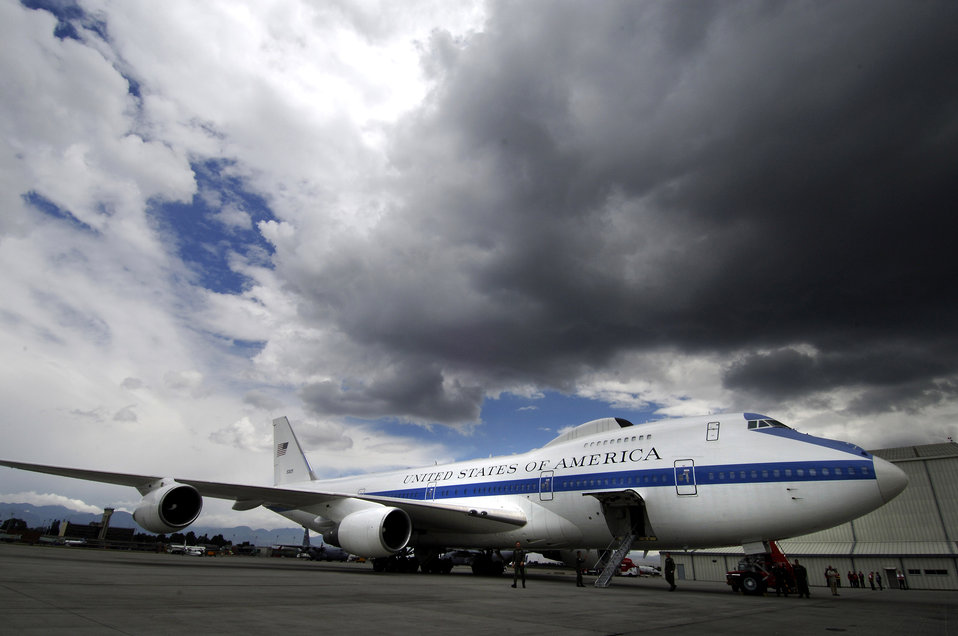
Standing by

An Air Force E-4B National Airborne Operations Center aircraft sits at the international airport in Bogota,Colombia Oct. 3, waiting for Secretary of Defense Robert M. Gates.